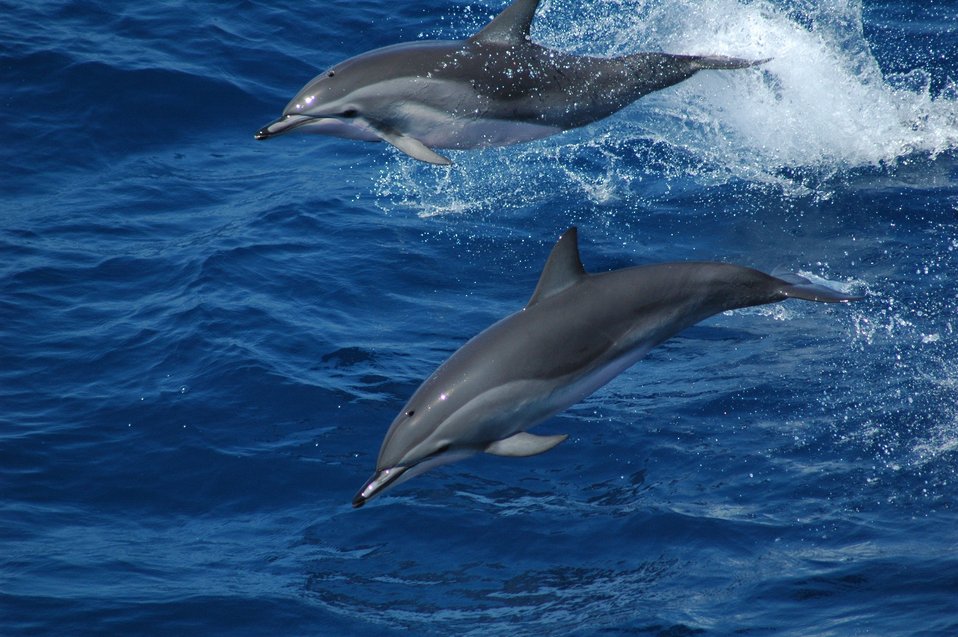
Clymene dolphin